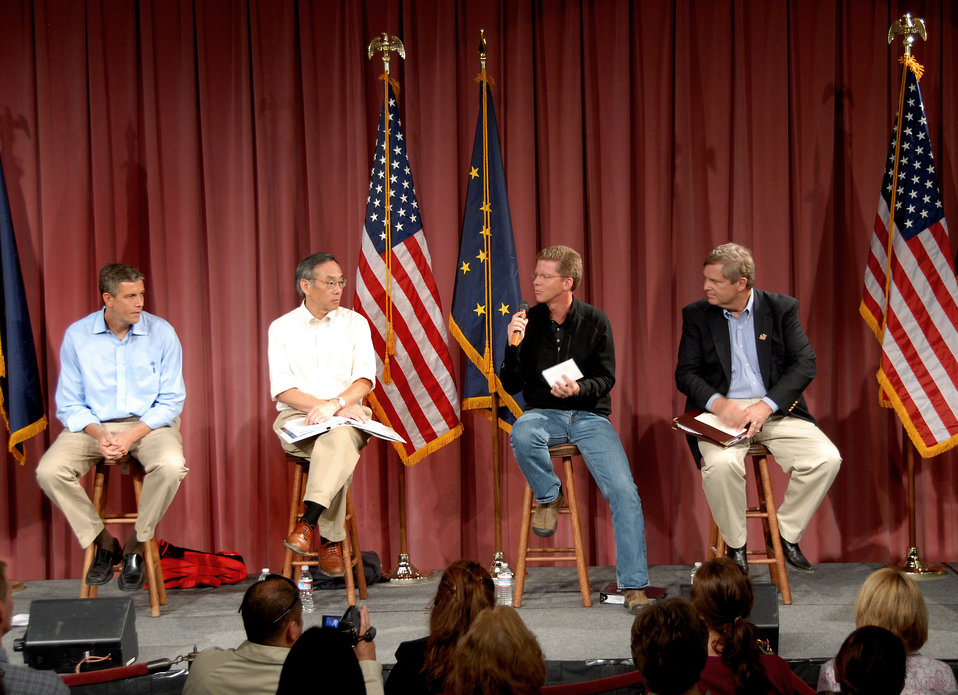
Rural Tour 0106

Rural Tour Alaska Aug 2009